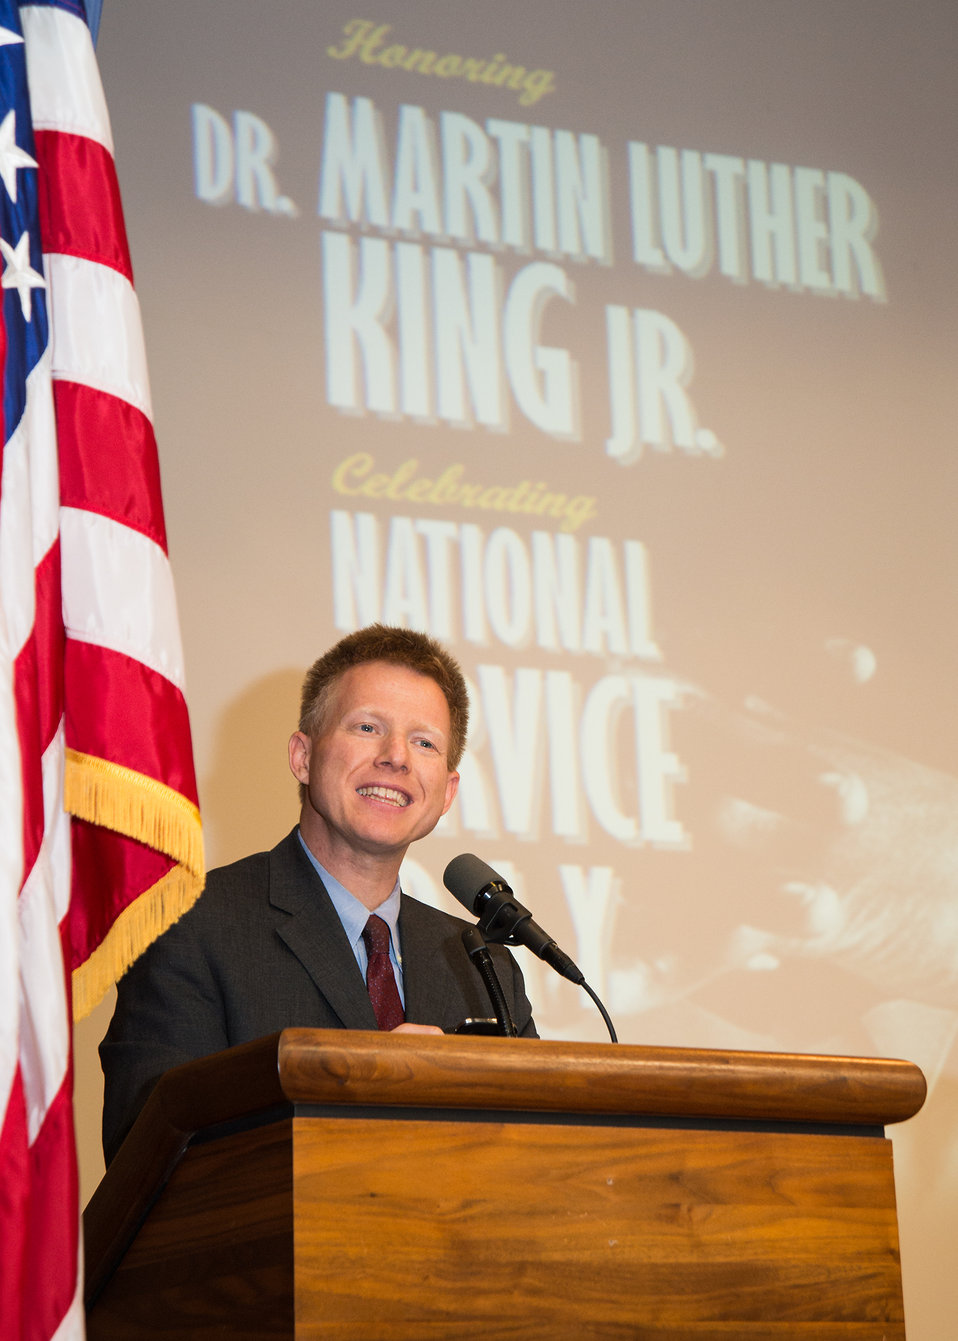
U.S. Department of Agriculture (USDA) Office of Cultural Transformation Director Max Finberg discusses the significance of National Service at USDA's Dr. Martin Luther King Jr. and National Service Day in Washington, D.C. on Wednesday, Jan. 15, 2014.